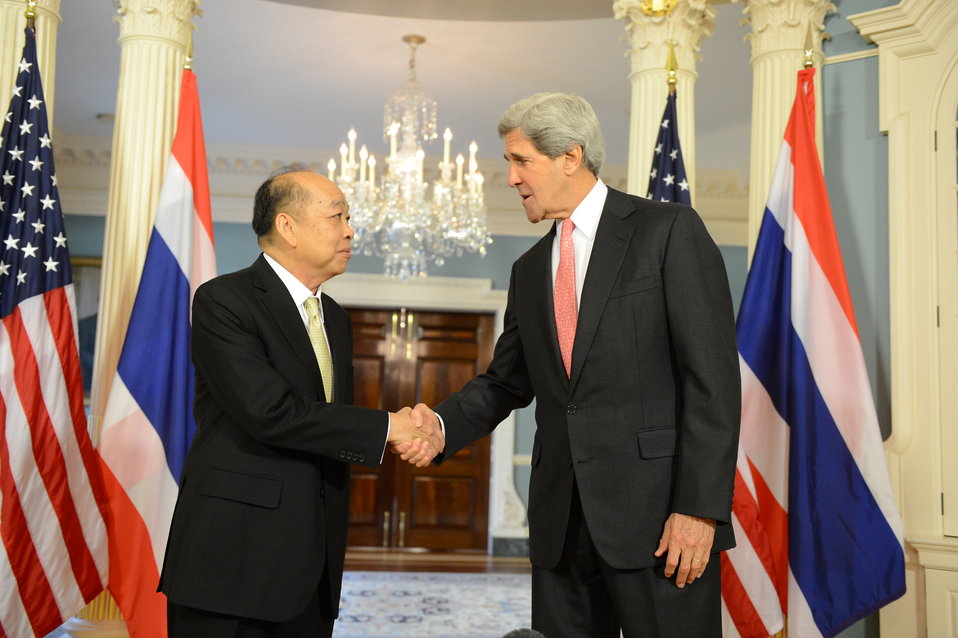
Secretary Kerry Meets With Thai Foreign Minister Tovichakchaikul

U.S. Secretary of State John Kerry meets with Thai Foreign Affairs Minister Dr. Surapong Tovichakchaikul at the U.S. Department of State in Washington, D.C., on May 6, 2013.